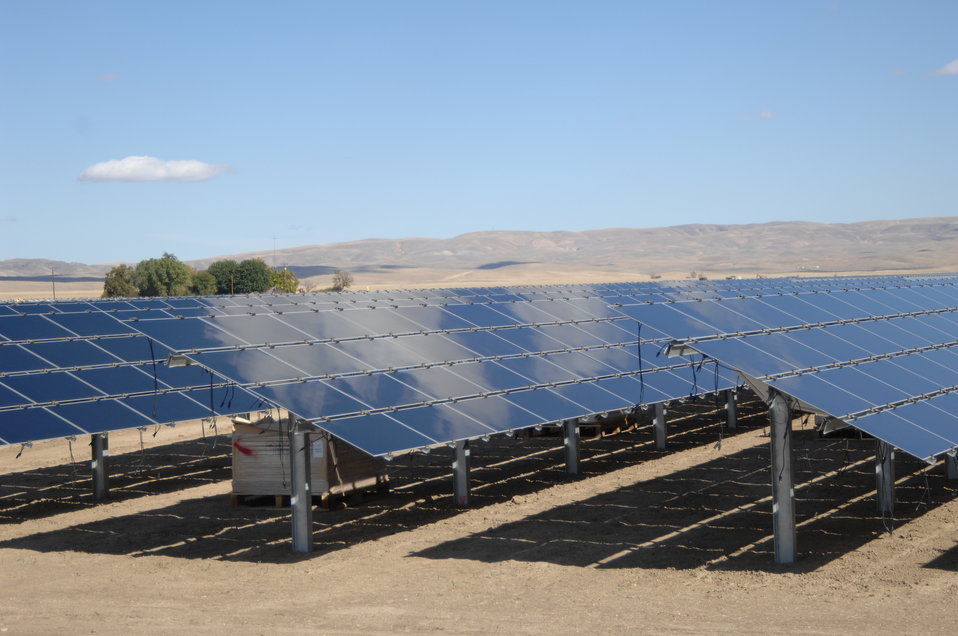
Solar Panels at Topaz Solar 4